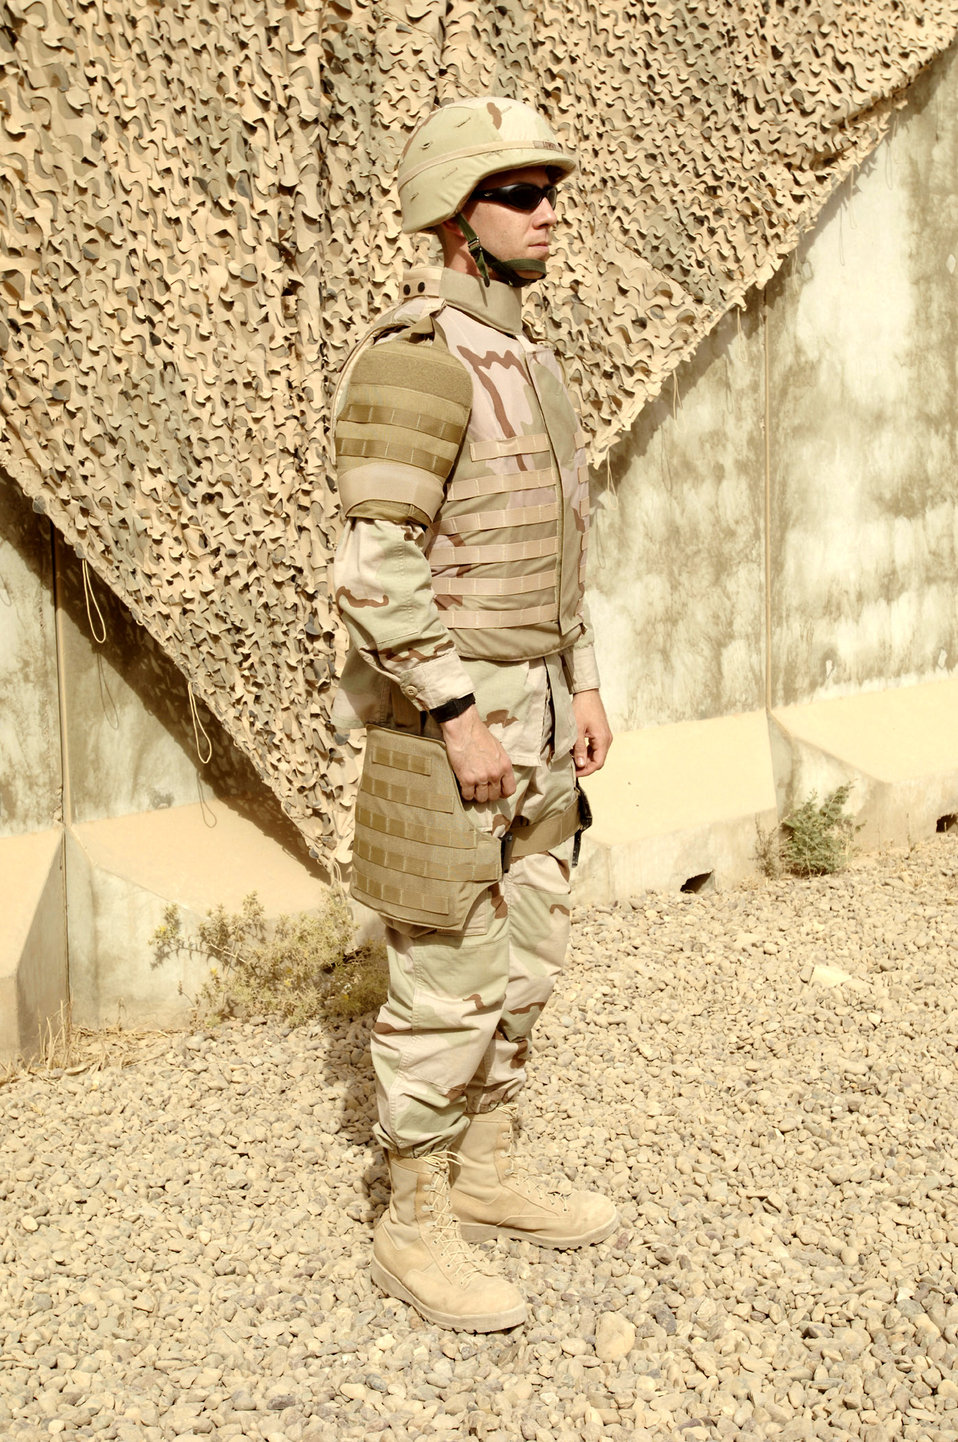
Airman tests new body armor

BALAD AIR BASE, Iraq -- Tech. Sgt. Gerald Lowry wears new